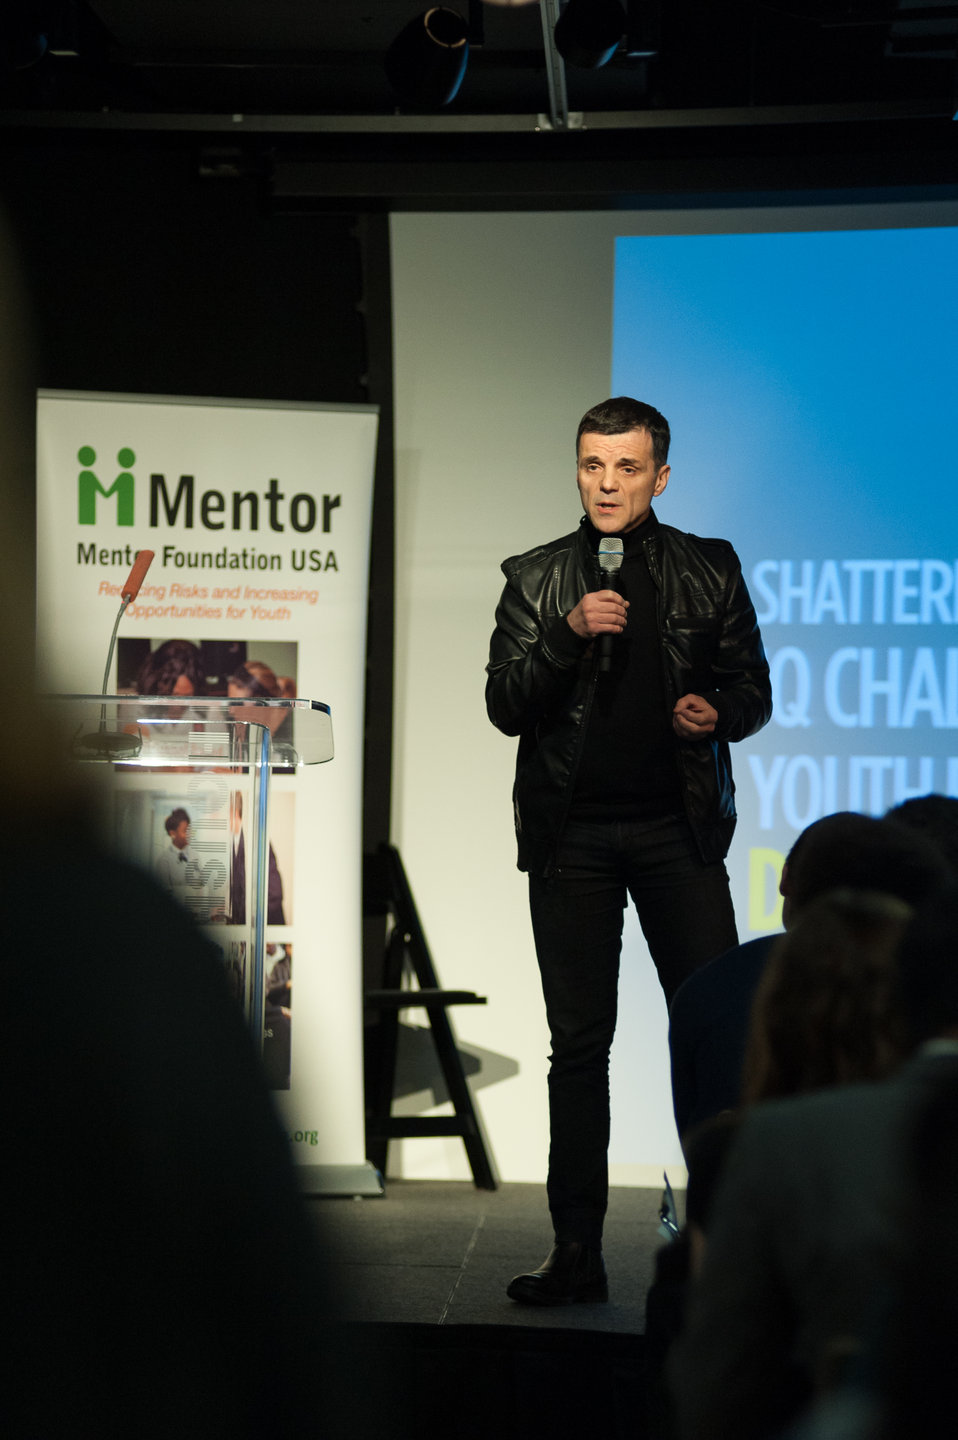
Mentor NDFW Event 2014

Mentor Foundation USA, in partnership with the National Institute on Drug Abuse (NIDA) and other key partners hosted a Youth Drug Facts Rally at the House of Sweden on Thursday, 30th January 2014. Approximately 200 students from five local high schools attended and had the opportunity to interact with top U.S. scientific experts, including Dr. Ruben Baler of NIDA and inspiring guest speakers to “shatter the myths” about drugs and substance abuse, while pledging to stay drug-free.